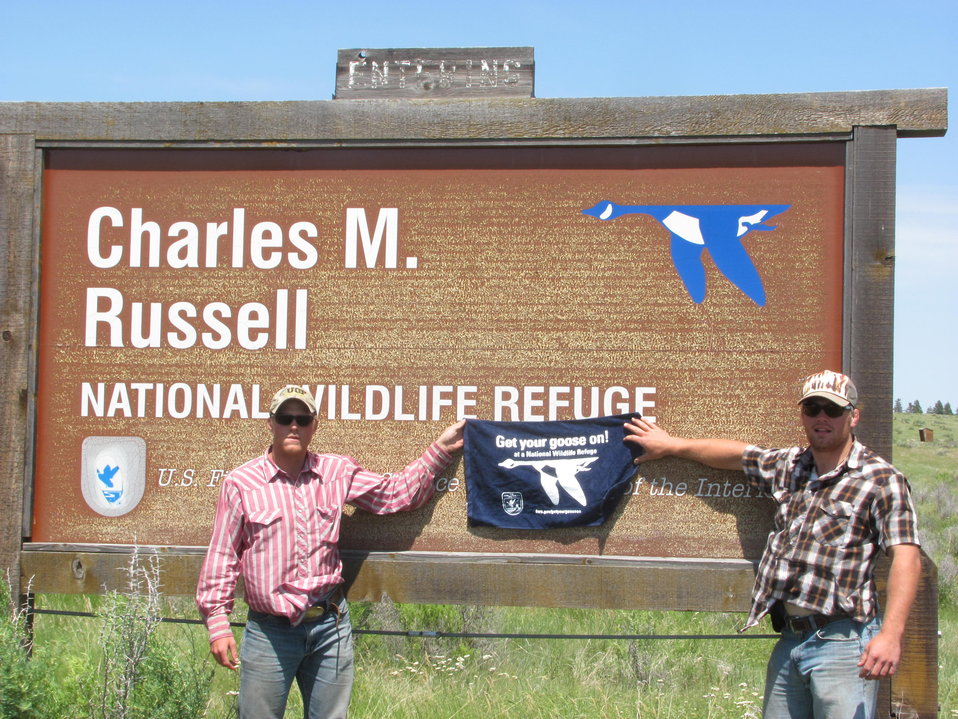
Get Your Goose On!

The Benton Lake National Wildlife Refuge traveling strike team Gets Their Goose On! at Charles M. Russell National Wildlife Refuge.